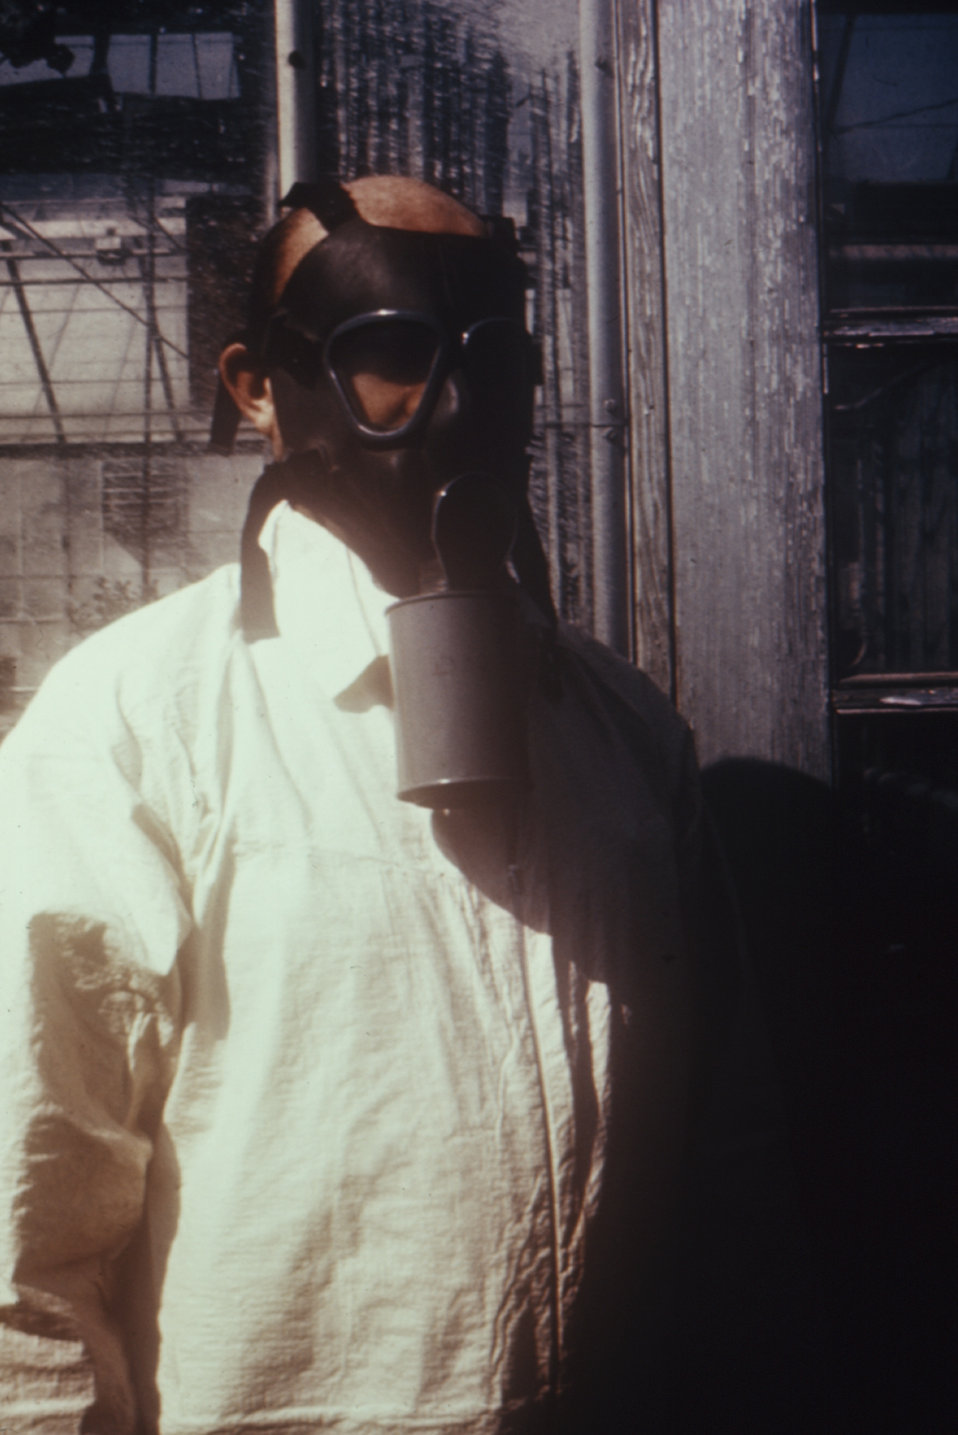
This individual was demonstrating the types of protective clothing worn by pesticide workers during the 1970's.